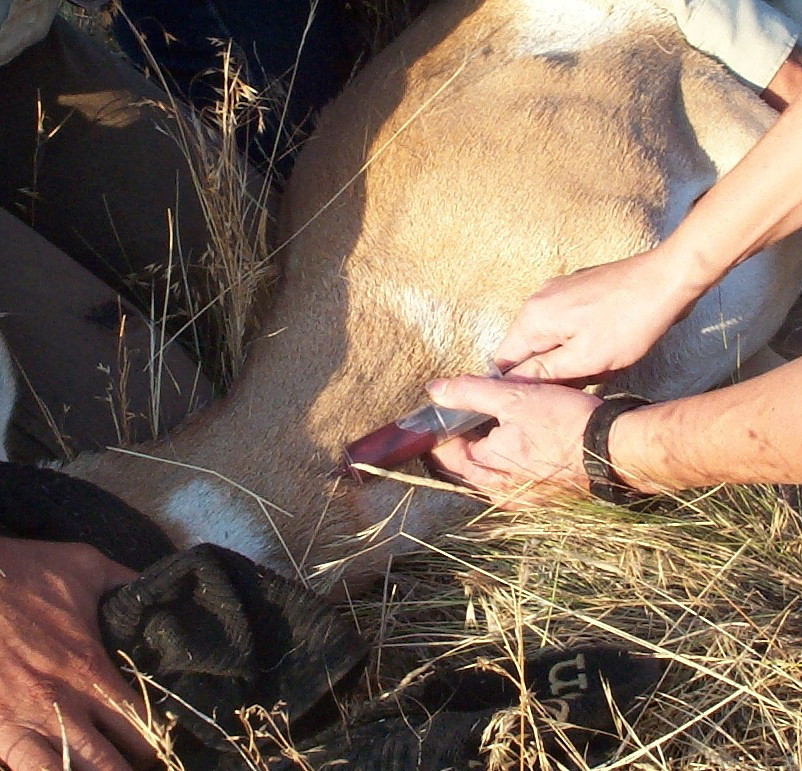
Collecting Blood from Pronghorn Antelope

Blood is collected for diagnostic testing from a pronghorn that is chemically immobilized. Serologic testing is an important tool for assessing the health and disease status of wildlife populations.